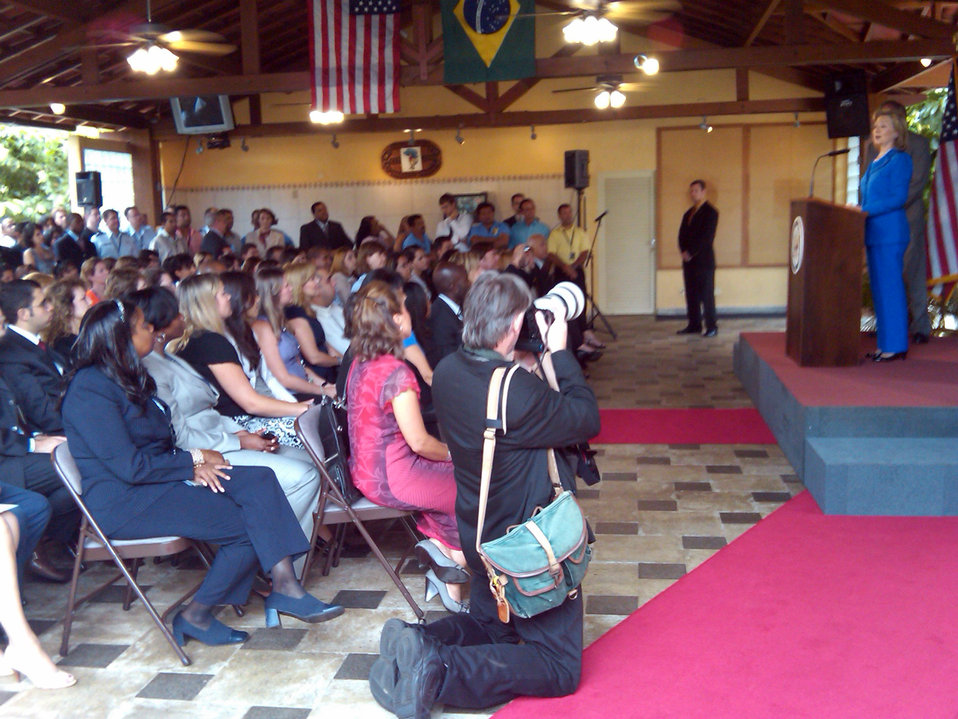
Secretary Clinton Speaks to Embassy Staff

U.S. Secretary of State Hillary Rodham Clinton speaks to U.S. Embassy staff in Brasilia, Brazil, March 3, 2010.